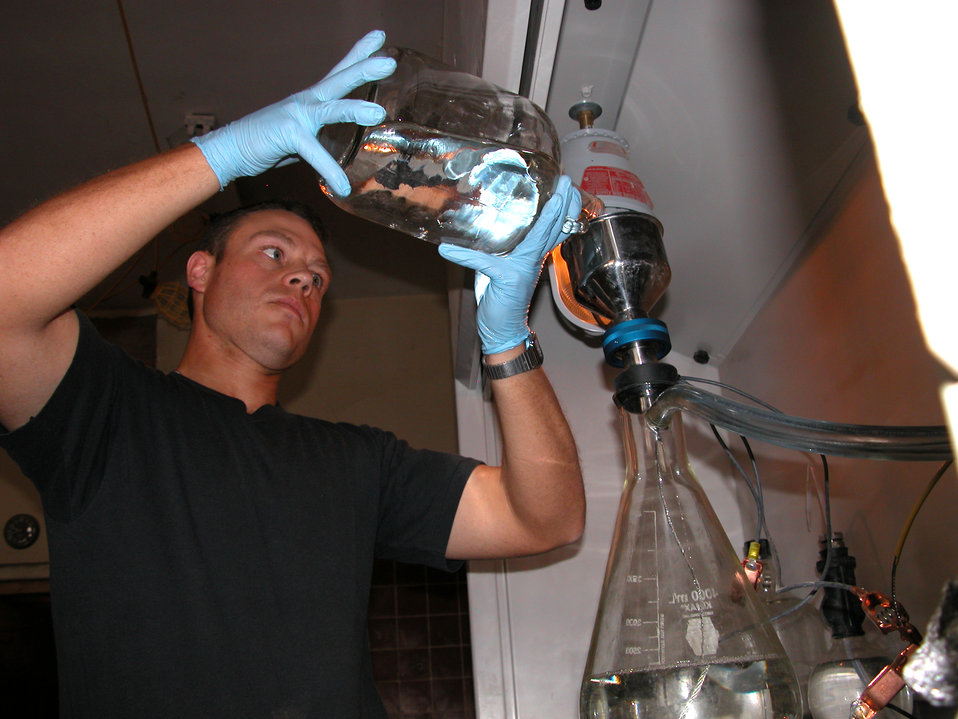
OIF

TALLIL AIR BASE, Iraq (AFPN) -- Senior Airman Kasey Saunders pours aviation fuel through a funnel to test the amount of solid matter in a fuel sample. Before fuel can be loaded onto an aircraft, it must be tested and have less than 2 milligrams per gallon of solid matter. Airman Saunders is deployed here from Kadena Air Base, Japan.